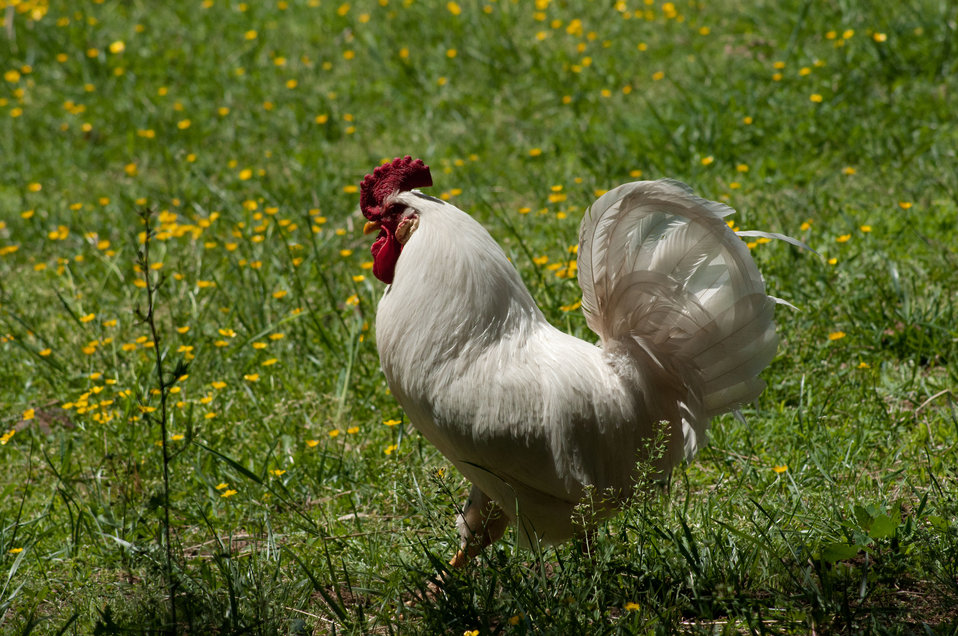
A rooster freely walkabout the lawns and pastures at the Tuckahoe Plantation, in Goochland County, VA area on Thursday, May 5, 2011. Where they graze on the grass they also leave nutrient rich manure to revitalize the soil, enhancing regrowth. The plantation was the boyhood home of President Thomas Jefferson from 1745 until 1752, today it is a working farm with cattle, sheep, chickens and rabbits supplying meats to Fall Line Farms a local food hub. Fall Line Farms offers a wide variety of household food staples and specialty items on an ever changing inventory of fruits, vegetables, meats, soaps, eggs, cheeses, flowers, honey, pastas, sauces, syrups, baked goods, mushrooms, flour and grains. Suppliers post what they have on a Lulus Local Food online listing and customers make their selection. Every Thursday, suppliers team up to deliver customized orders to, one of several pick-up points, designated by the customer in or around the Richmond, VA area.